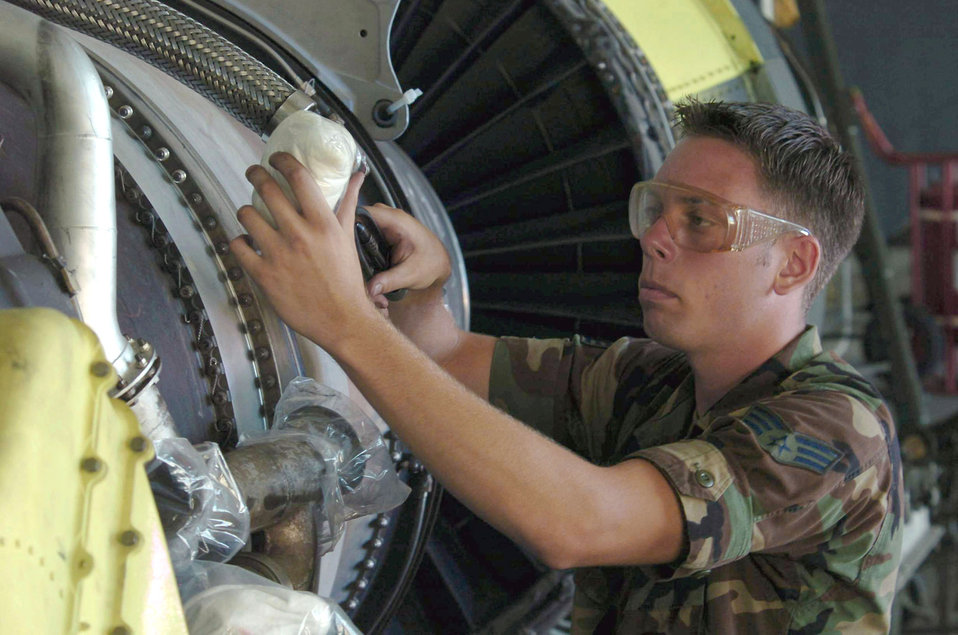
Minot B-52 ground crews deployed at Guam

ANDERSEN AIR FORCE BASE, Guam -- Senior Airman Lester Smith uses a safety wire to secure a quick-disconnect line to prevent leaks on a B-52 Stratofortress engine. Airman Smith is an engine mechanic from the 5th Bomb Wing at Minot Air Force Base, N.D. The wing is the first rotation to deploy to Guam following the decision to station a bomber force here.